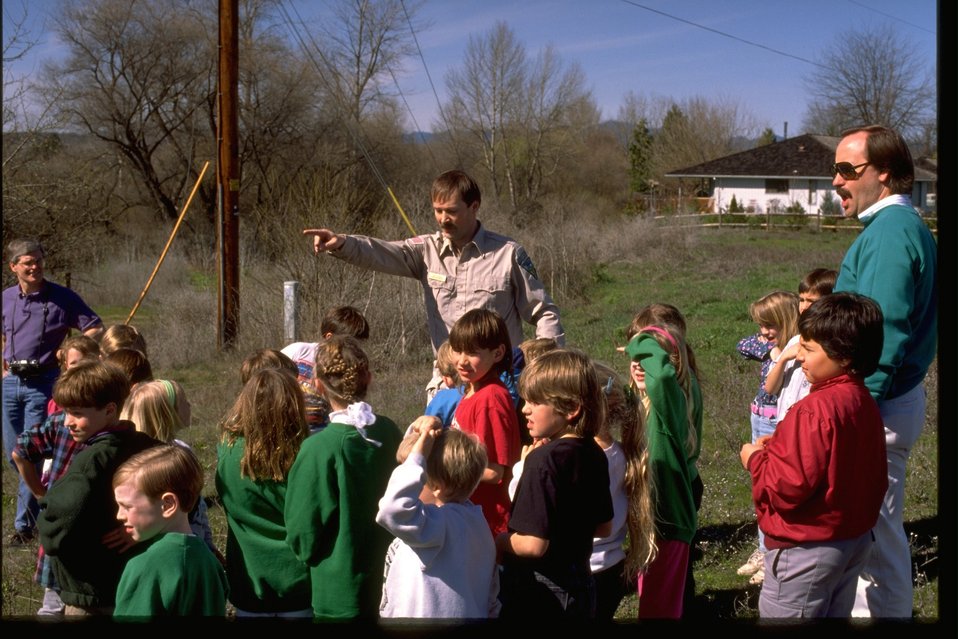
Jacksonville Elementary School students given an environmental education lesson.